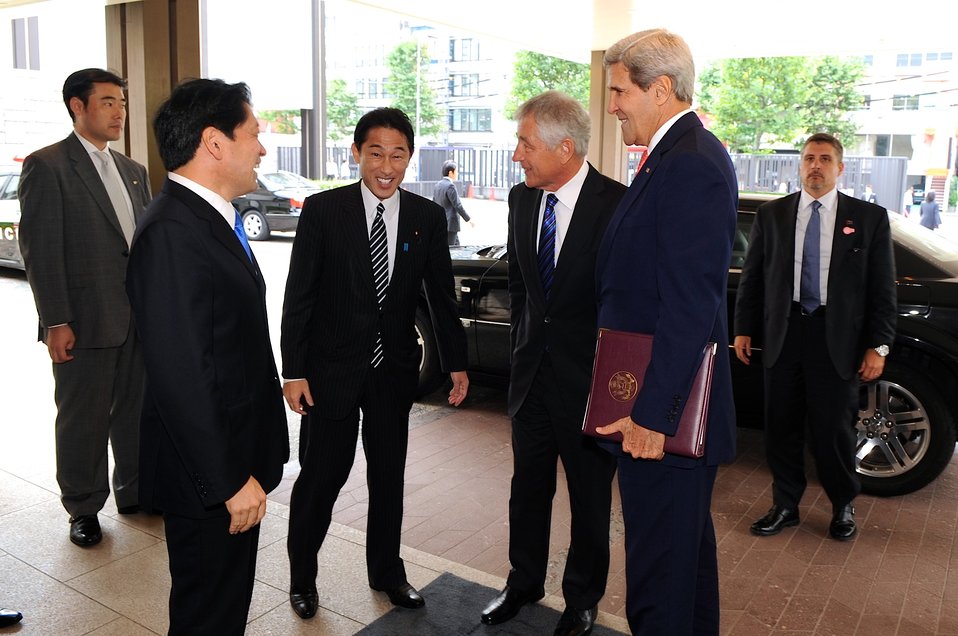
Secretary of State Kerry and Defesnse Secretary Hagel Arrive for the U.S.-Japan Security Consultative Meeting (2 2) in Tokyo

U.S. Secretary of State John Kerry and U.S. Secretary of Defense Chuck Hagel arrive for a meeting with Japanese Foreign Minister Fumio Kishida and Japanese Defense Minister Itsunori Onodera in Tokyo on October 3, 2013.